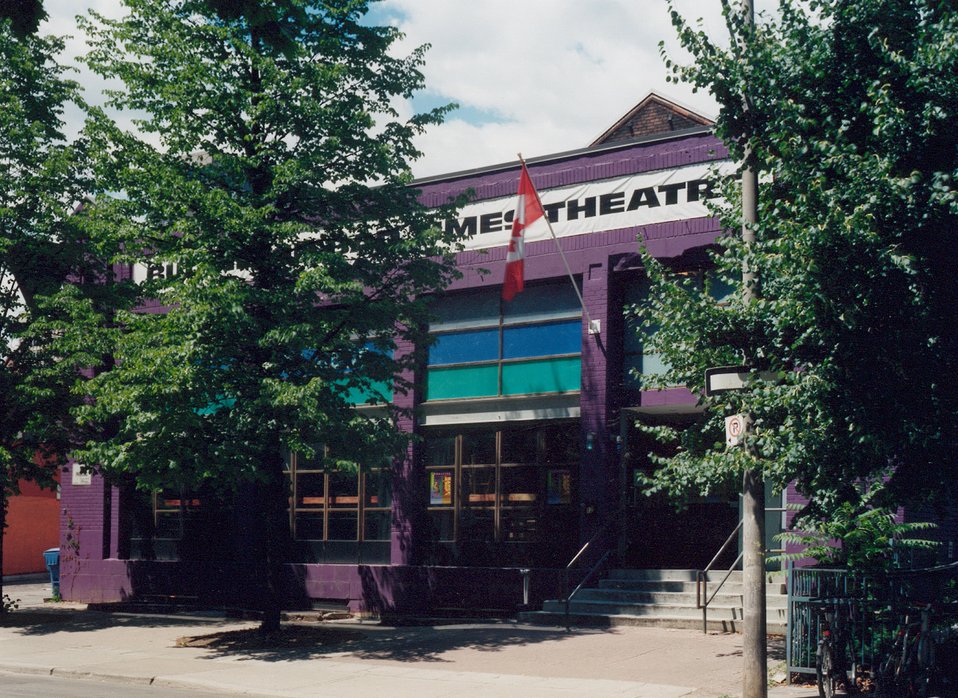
Buddies In Bad Times Theatre, 12 Alexander Street, Toronto, ON